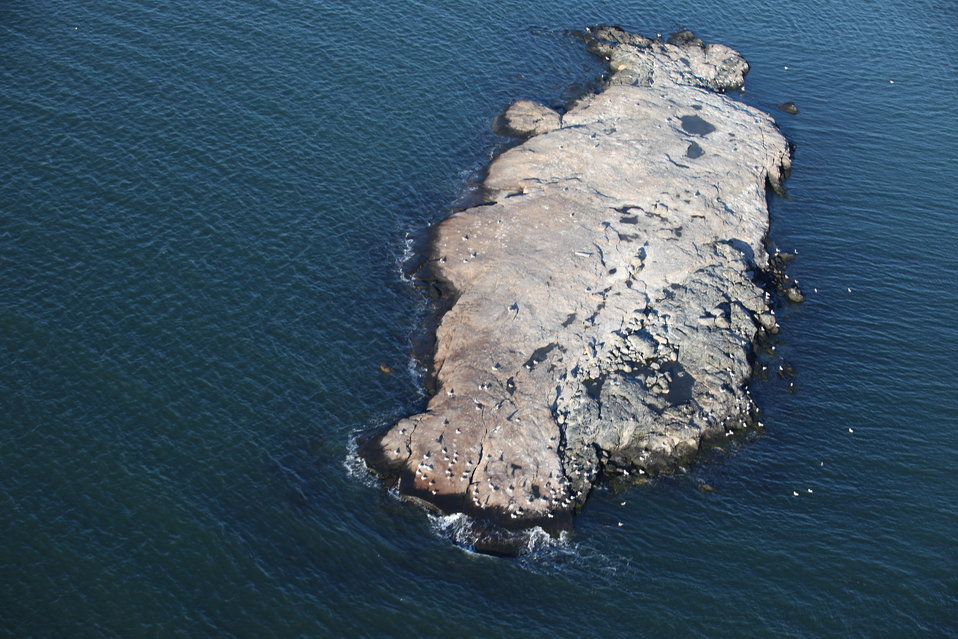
Small Island at Stewart B. McKinney National Wildlife Refuge (CT)

Aerial view of a small unnamed island that is part of the Stewart B. McKinney National Wildlife Refuge.